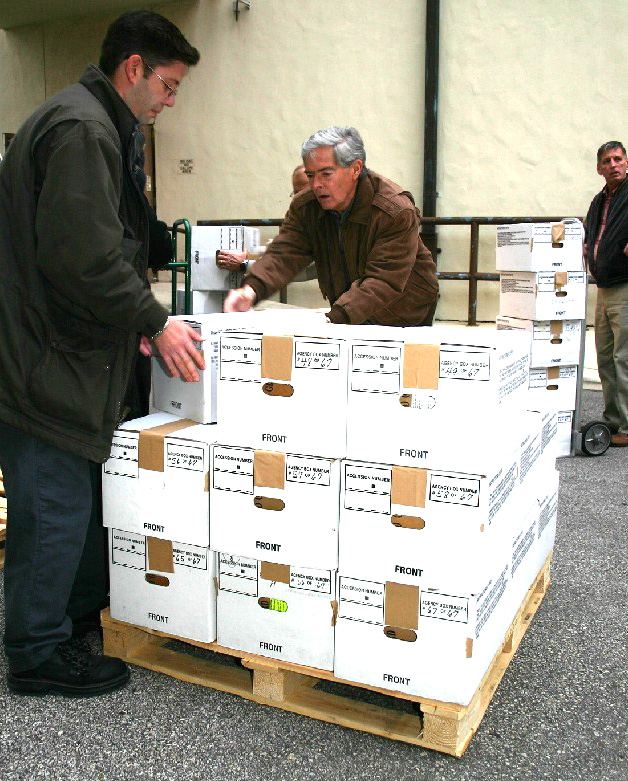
Personnel records to stay at AFPC

RANDOLPH AIR FORCE BASE, Texas -- Sam Ballard and Robert Weston load file boxes of records onto a pallet here in February. The boxes were part of the final 1,800 records in paper form to be delivered to the National Personnel Records Center in St. Louis. The automated records management systems branch here will soon process all records in an electronically scanned format.